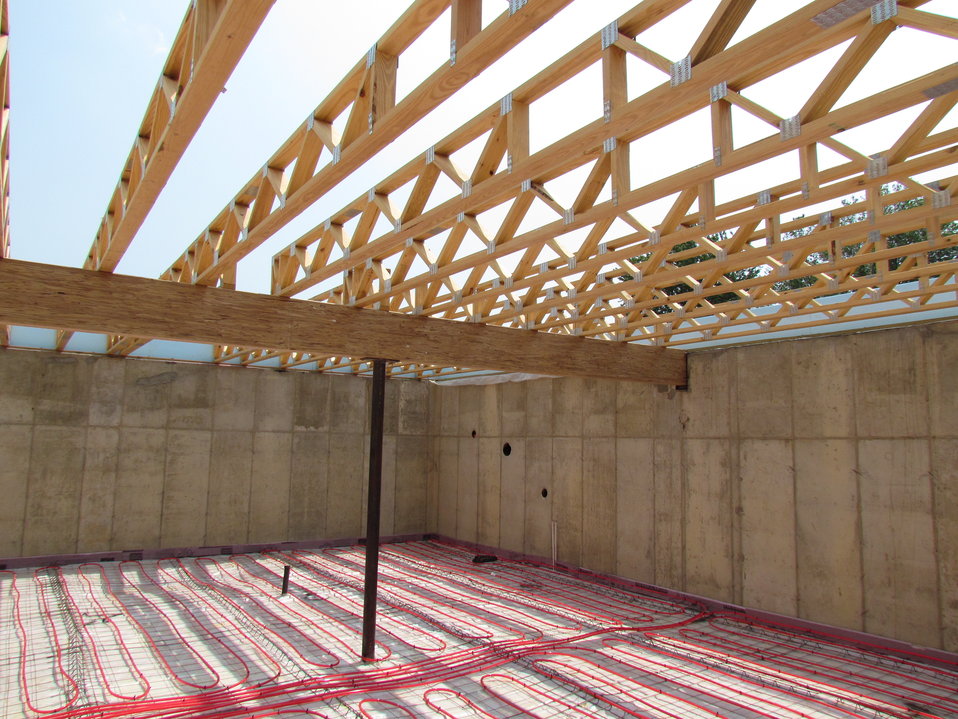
Net-Zero Energy Residential Test Facility - Construction photo showing slab insulation, radiant basement slab tubing, laminated structural beam, and open web floor trusses.